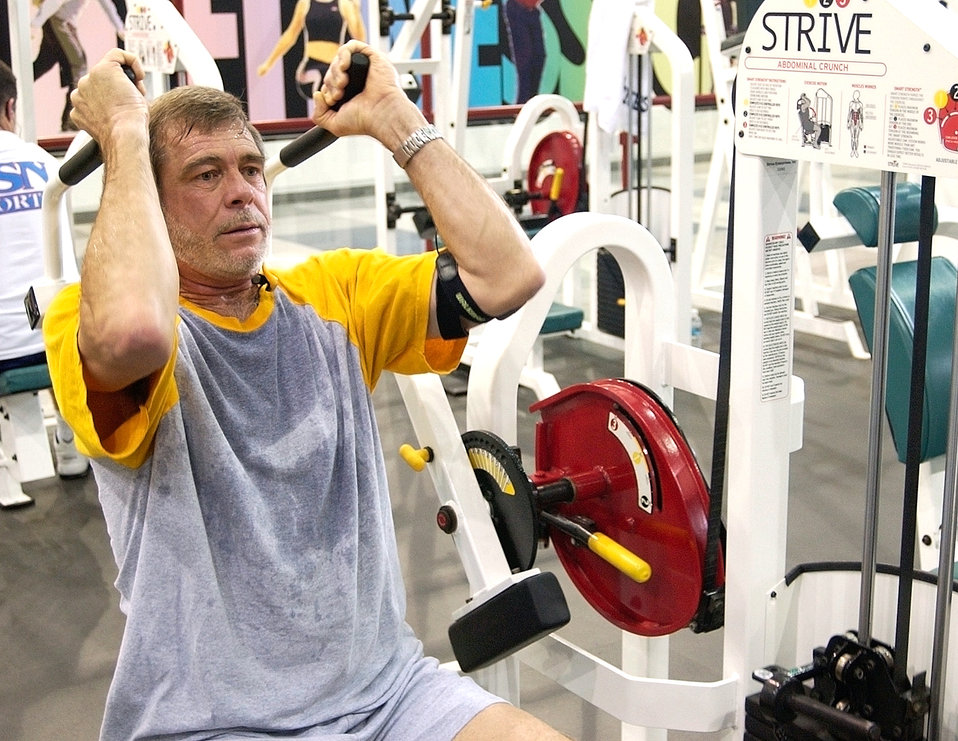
Fit at 51

WRIGHT-PATTERSON AIR FORCE BASE, Ohio (AFPN) -- Jim Staffan does reps on one of the resistance machines in the Wright Field Fitness Center here. At 51, Mr. Staffan said, he was an overweight smoker, but he changed his life after becoming part of the Air Force civilian fitness program. He quit smoking and attended a health class at the health and wellness center. Since February 2005, he's lost 47 pounds and five inches off his waist.